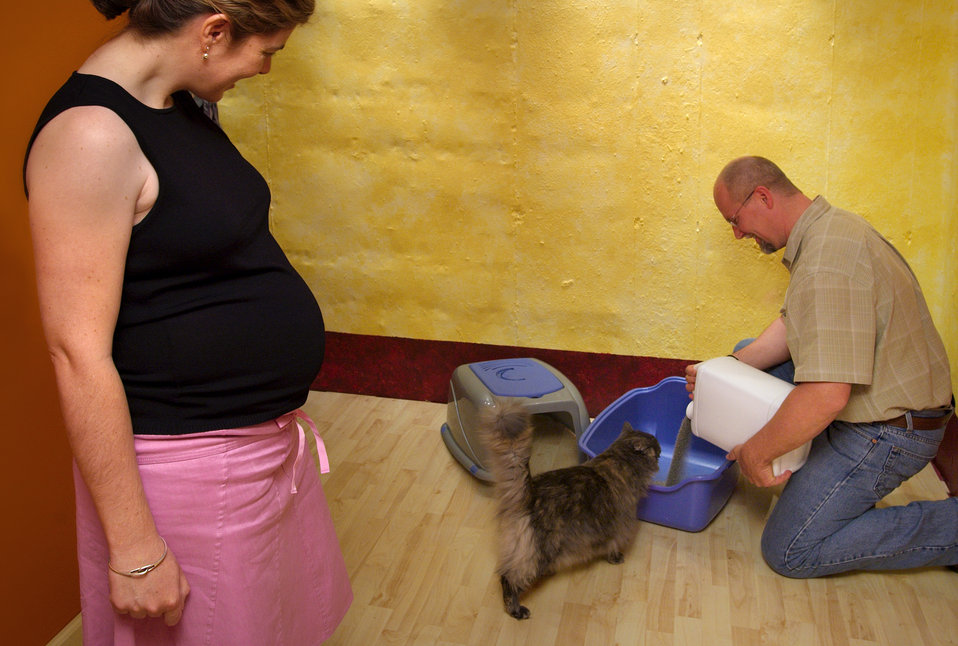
In this 2005 photograph, a pregnant woman was looking on while her husband was in the process of changing the kitty litter, in order to avoid contact with possible pathogens such as Toxoplasma gondii, the etiologic agent responsible for the disease, 'Toxoplasmosis'. This parasite is found throughout the world, possibly infecting more than 60 million people in the United States. Of those who are infected, very few have symptoms because a healthy person's immune system usually keeps the parasite from causing illness. However, pregnant women and individuals who have compromised immune systems should be cautious; for them, a Toxoplasma infection could cause serious health problems.